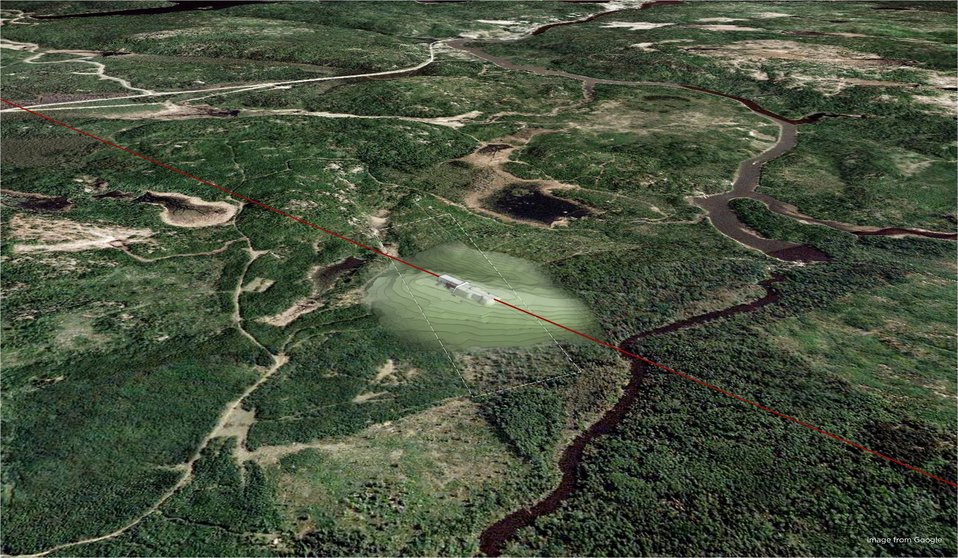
This rendering shows the future Nova Detector Facility on the property. Rendering by Holabird and Root.

The construction of the facility is supported under a cooperative agreement for research between DOE and the University of Minnesota. The construction will result in procurement for concrete, steel, road building materials and mechanical and electrical equipment from U.S. firms. The NoVA project involves about 180 scientist and engineers from 28 institutions.